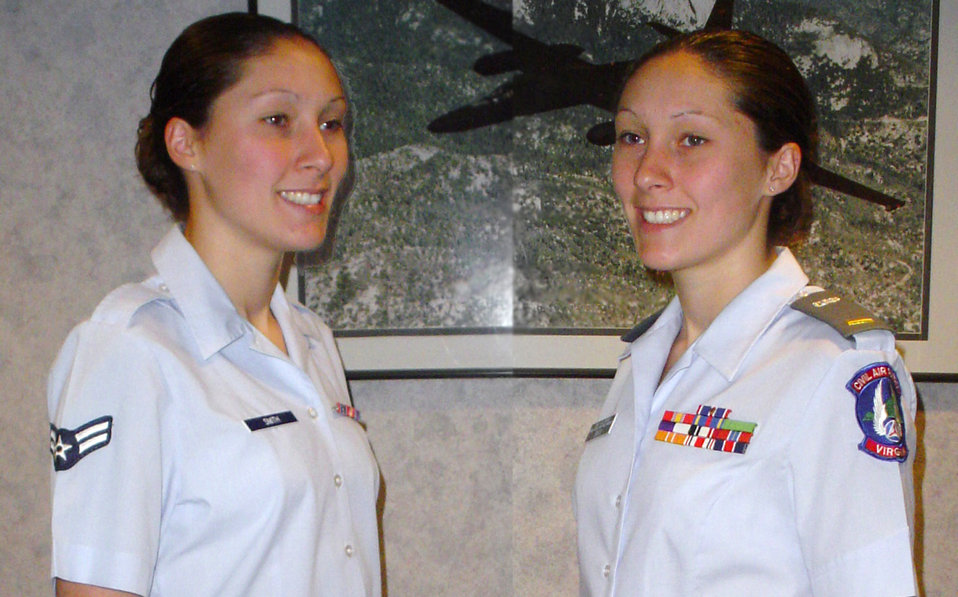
Airman moonlights as CAP officer

LANGLEY AIR FORCE BASE, Va. -- Airman 1st Class Jillian Smith wears two uniforms. As an active-duty Airman (left), she is a communications journeyman assigned to the 27th Intelligence Support Squadron. In her off-duty time, she volunteers as a second lieutenant (right) with the Civil Air Patrol.